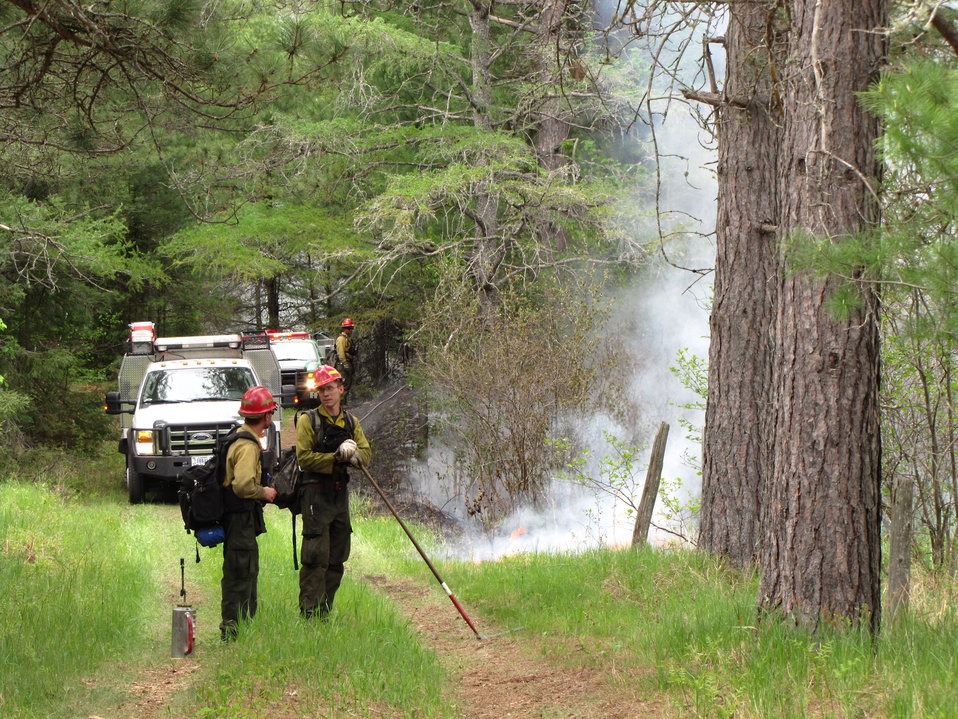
The Hand Crew Waiting for the Back Fire Flare up

Lighting a back fire off Pine Creek Road to keep the main fire contained.